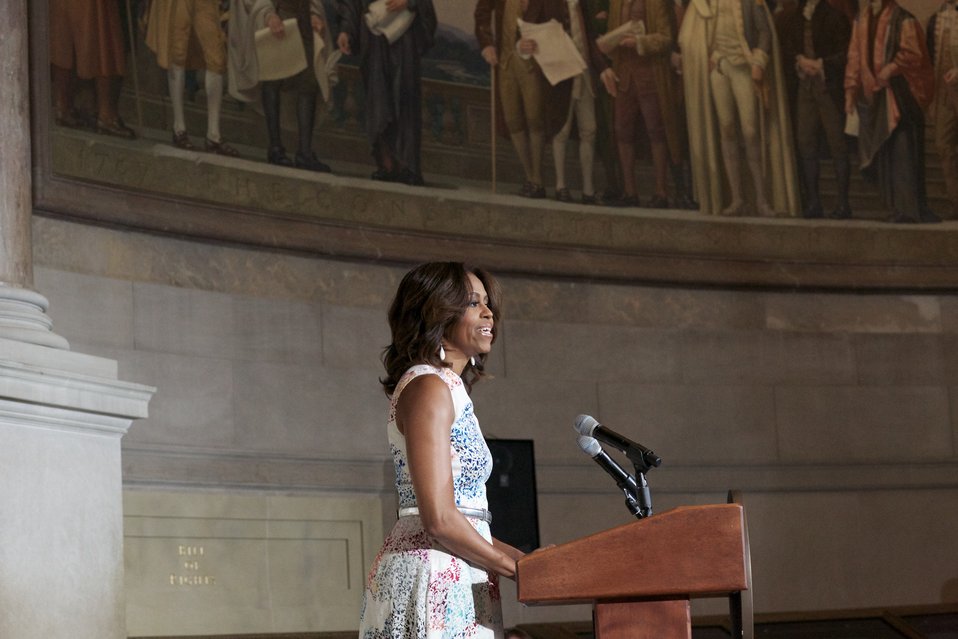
Naturalization Ceremony with Michelle Obama